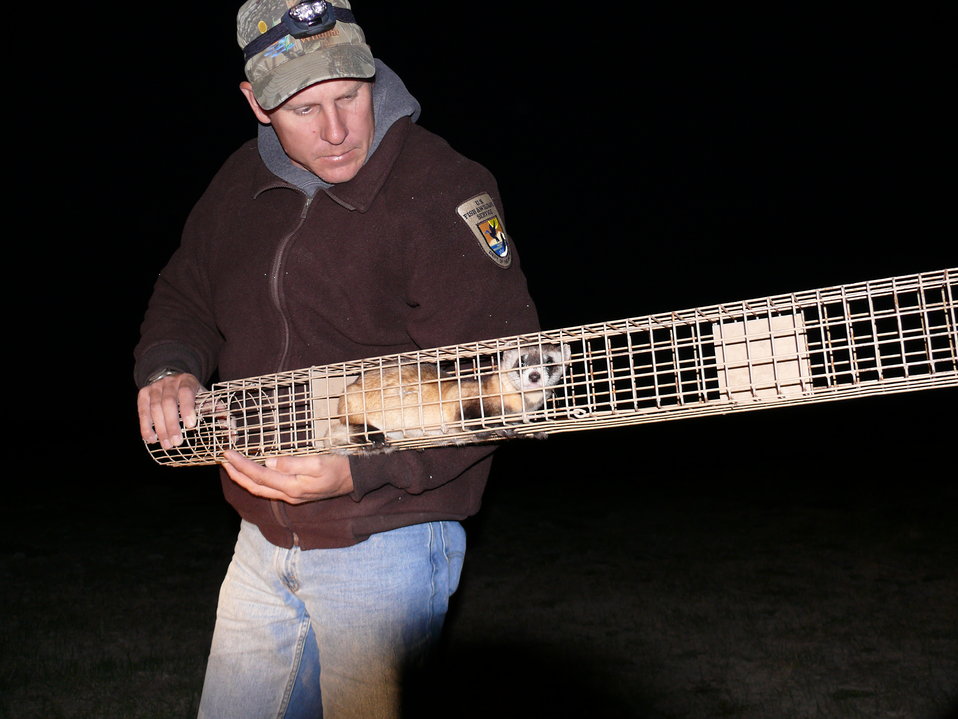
Tony Makes a Capture

In preparation for starting our own reintroduced population of black-footed ferrets in Kansas, Tony Ifland of Kirwin NWR and I spent time learning capture methods in the Conata Basin of South Dakota.

Credit: Dan Mulhern / USFWS

Photo Contest Entry #138